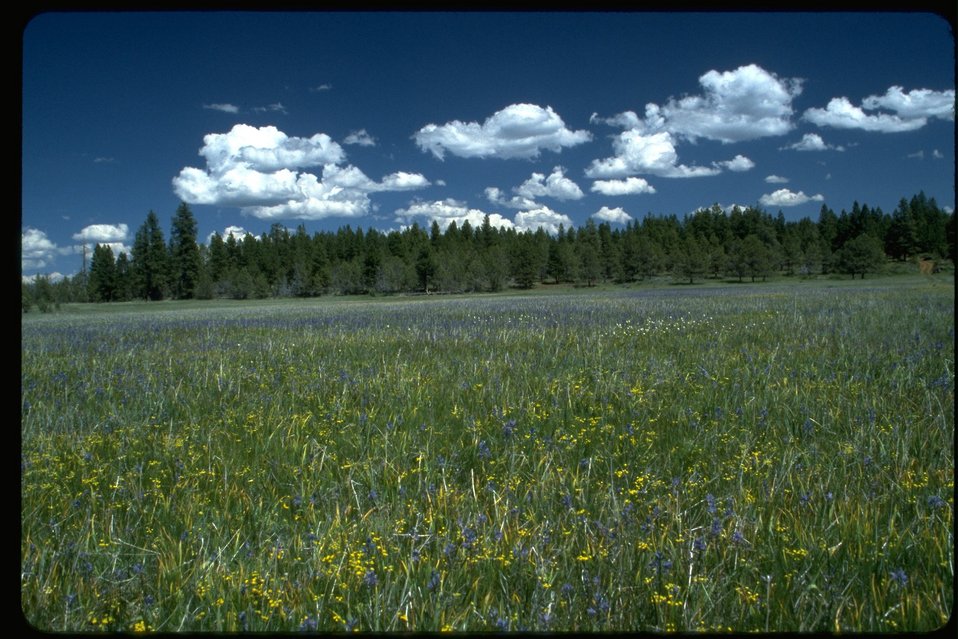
Long shot of Blue Camas site.